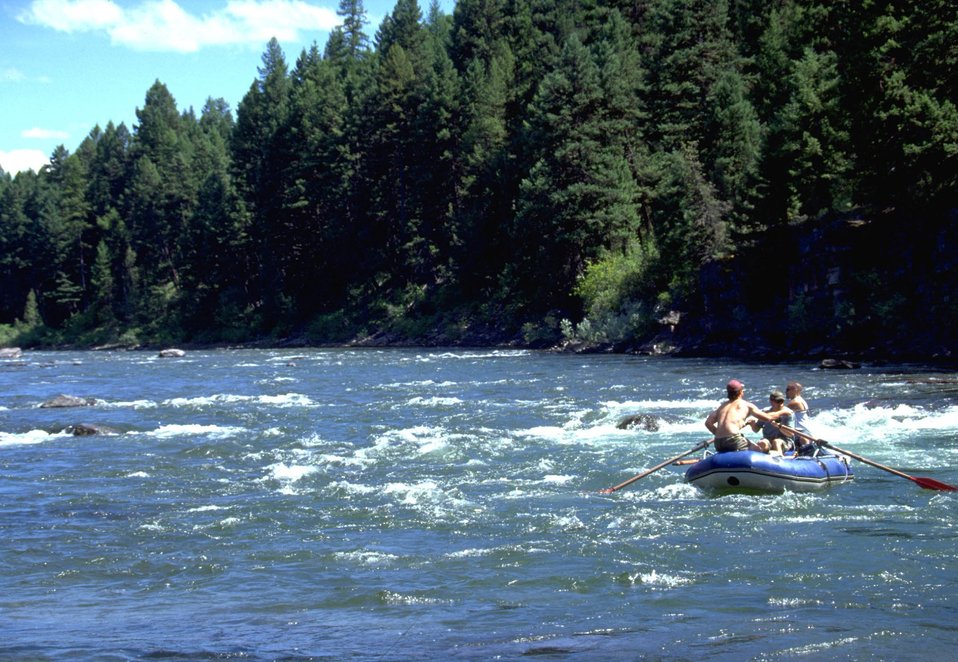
Blackfoot River